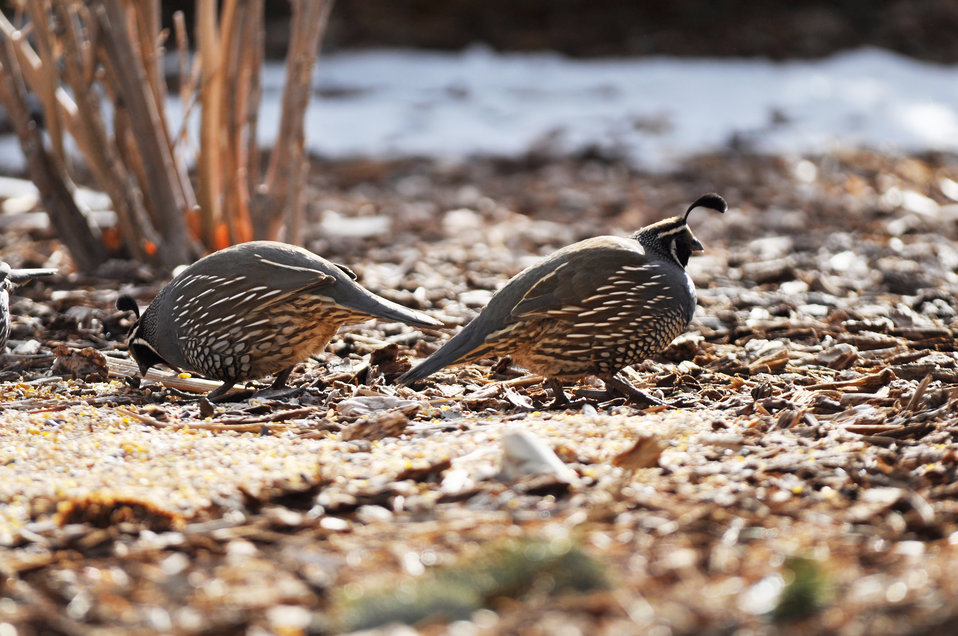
California quail photos taken in Gardnerville, NV